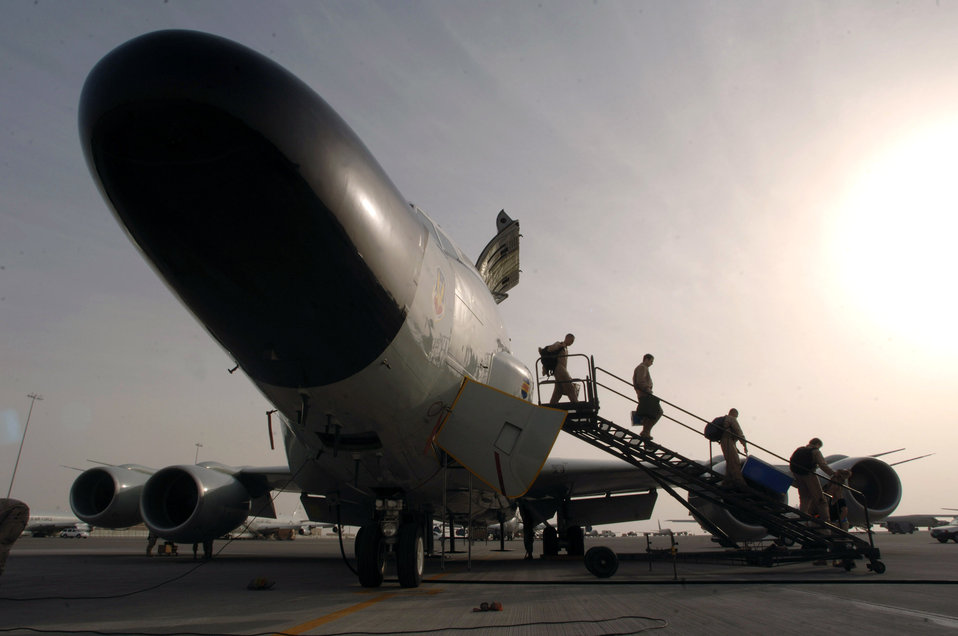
Jan. 11 marks 6,000 consecutive days in Southwest Asia

Shortly after an RC-135 Rivet Joint returns to it's desert base in the Persian Gulf following a mission over Iraq, the first of 34 crew members begin to exit the aircraft. The aircraft, deployed from the 55th Wing at Offutt Air Force Base, Neb., has maintained a constant presence in Southwest Asia for 6,000 days since Aug. 9, 1990, just prior to Operation Desert Shield.